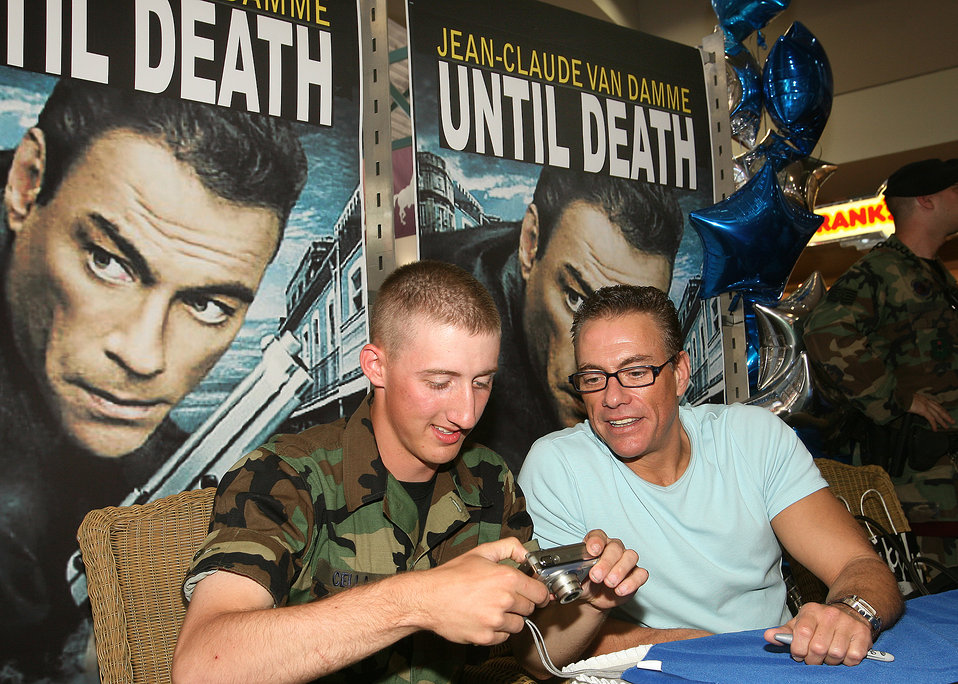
Strike a pose with Jean-Claude

Airman Basic Mathew Cella shows actor Jean-Claude Van Damme a digital image from his camera after the two posed for photos June 2 at the base exchange at Lackland Air Force Base, Texas. Mr. Van Damme signed autographs and posed for photos with base members. Airman Cella is going through technical training in the security forces career field with the 343rd Training Squadron at Lackland AFB.